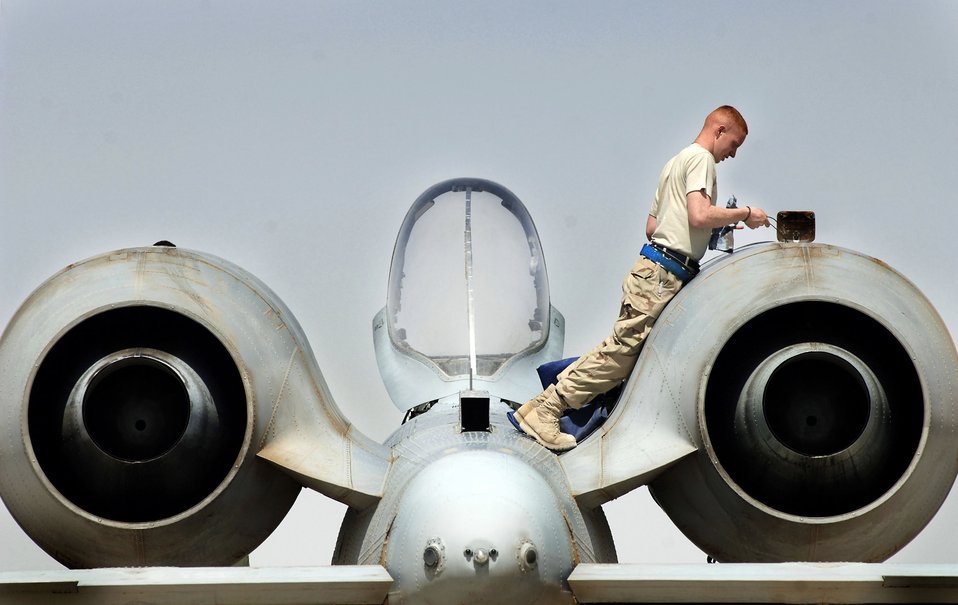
Thunder ready

Senior Airman Kevin Crawford performs an intake and exhaust inspection on an A-10 Thunderbolt II April 25 at Al Asad Air Base, Iraq. A-10s provide close-air support to ground troops in Iraq. Airman Crawford is from Boling Brook, Ill.